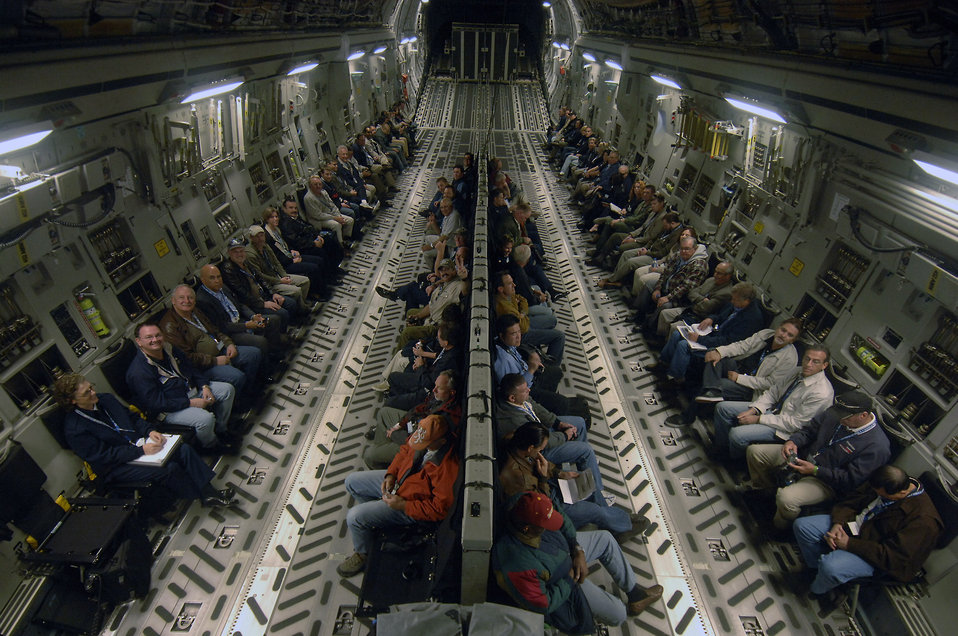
C-17 civic leader orientation flight

Civic leaders from Southern California had the opportunity to take an orientation ride on a C-17 Globemaster III during a refueling mission Nov. 10 from March Air Reserve Base, Calif. Held as part of Air Force Week-Los Angeles, the flight provided a chance for community members to learn more about the Air Force?s people and mission.